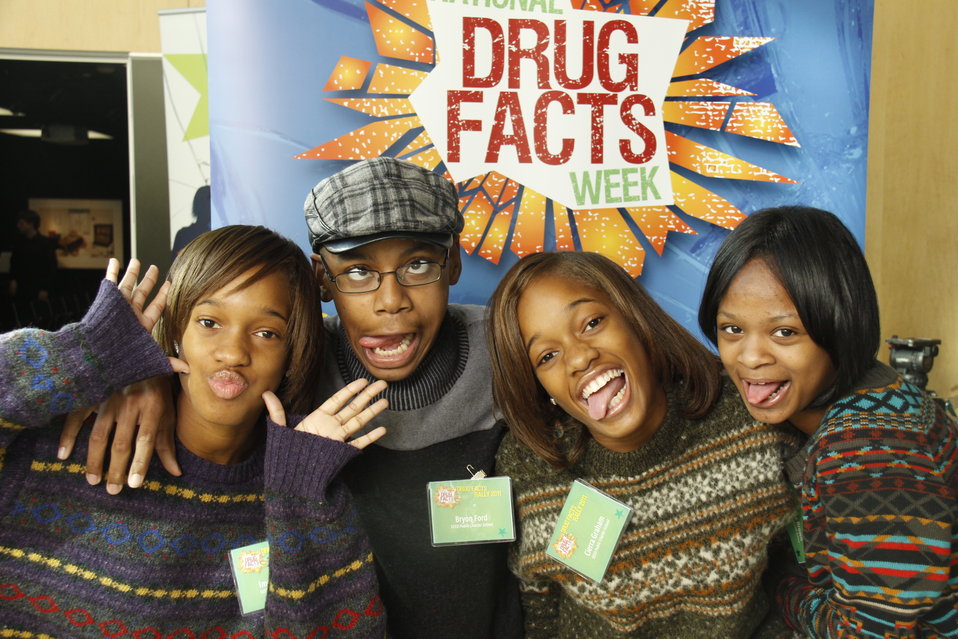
NDFW Mentor Event